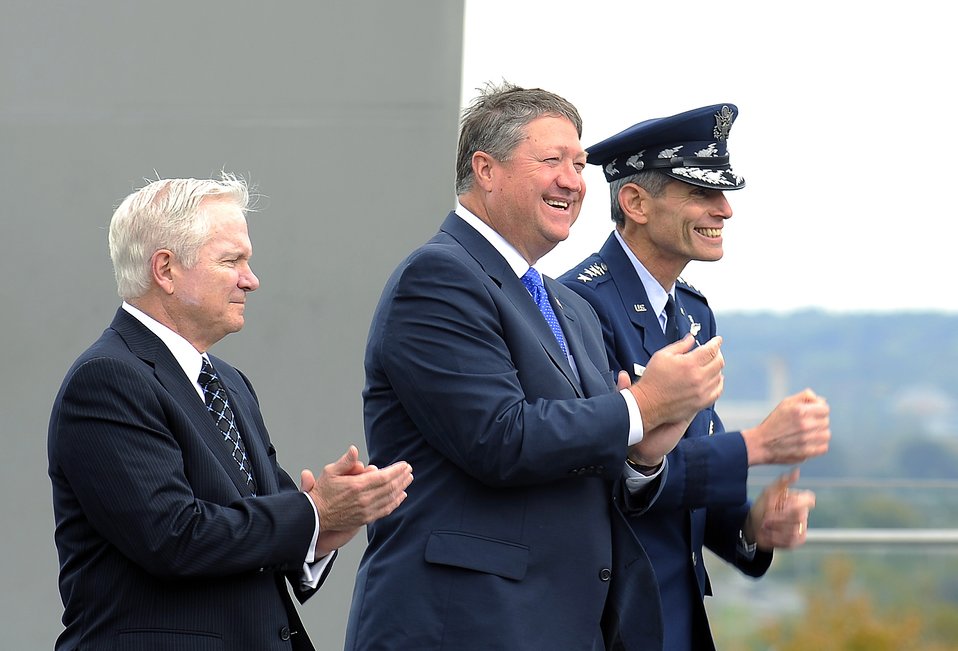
Secretary of Defense Robert M. Gates

U.S. Defense Secretary Robert M. Gates, Secretary of the Air Force Michael B. Donley and Air Force Chief of Staff Norton A. Schwartz sing the Air Force Song after Secretary Donley's swearing in by Secretary Gates at the Air Force Memorial in Arlington, Va., Oct. 17.